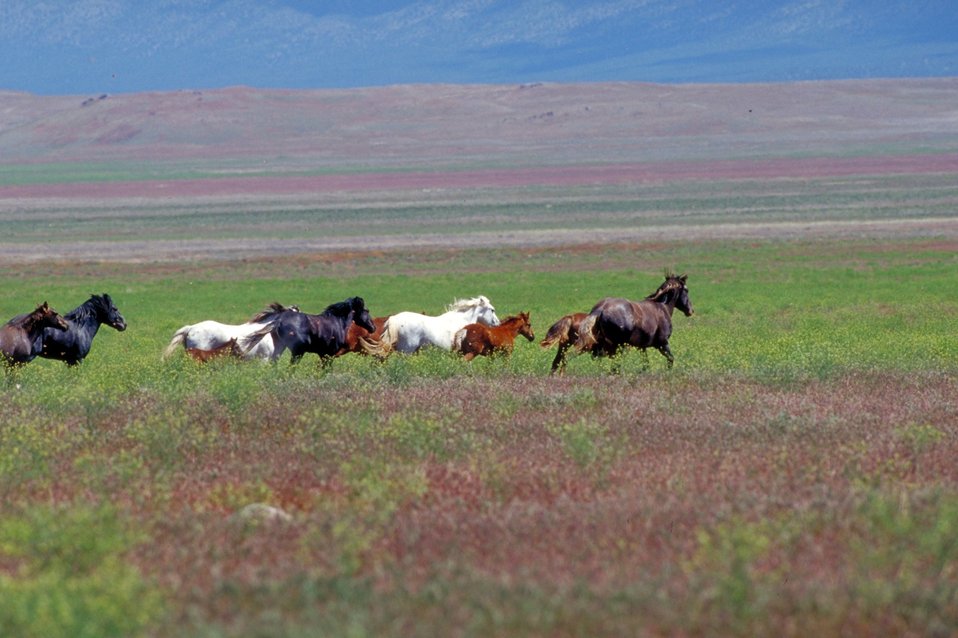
Onaqui Herd near Dugway, Utah.